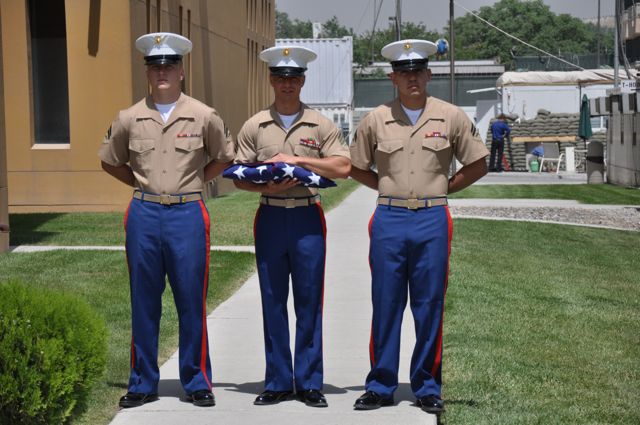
Memorial Day at US Embassy in Kabul